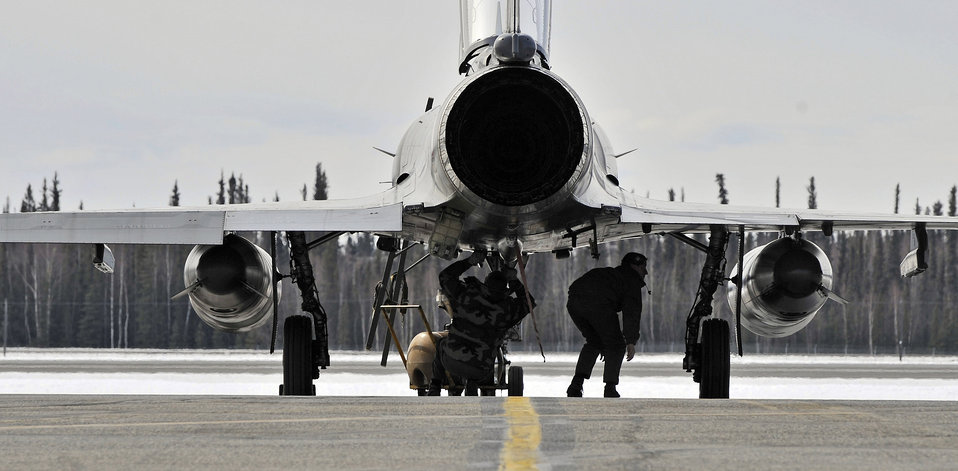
French air forces arrive for Red Flag-Alaska

Aircraft maintainers from Luxeuil Air Base, France, conduct post flight checks April 14 on a Mirage 2000 fighter at Eielson Air Force Base, Alaska. French air force personnel arrived at Eielson AFB to participate in Red Flag-Alaska 09-2. This exercise provides joint offensive counter-air, interdiction, close air support and large-force employment training in a simulated combat environment.